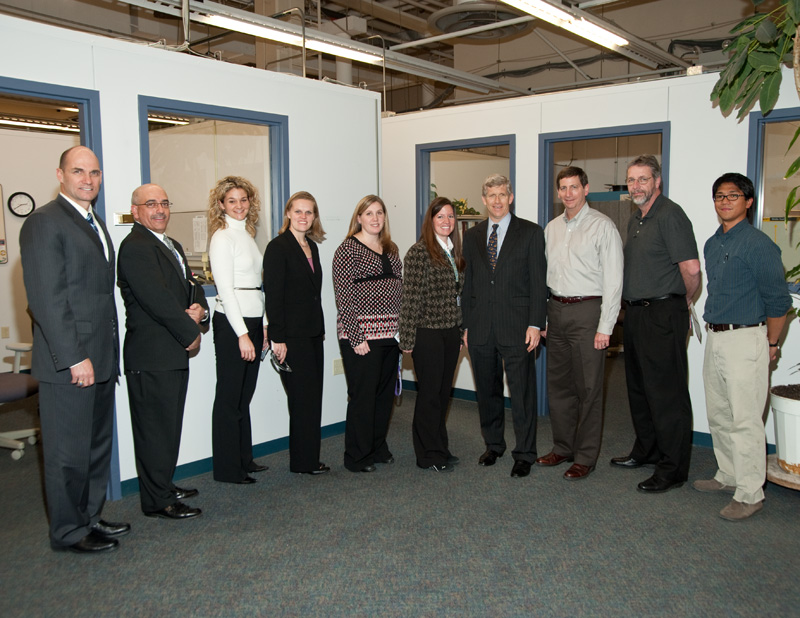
Deputy Secretary Daniel Poneman and NNSA Administrator Thomas D'Agostino meet with employees from the Stronglink Mechanisms area.